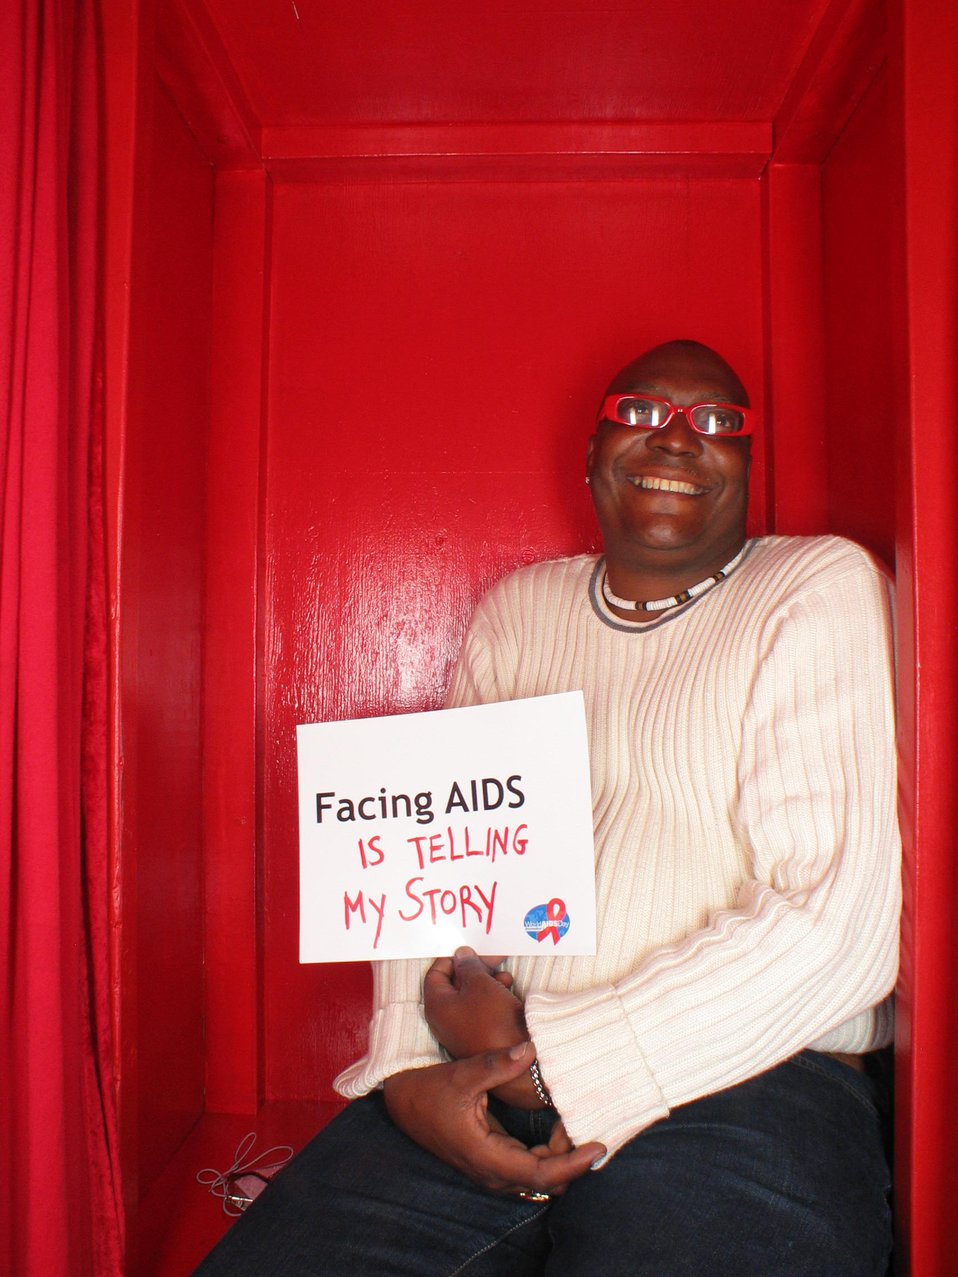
Facing AIDS is telling my story